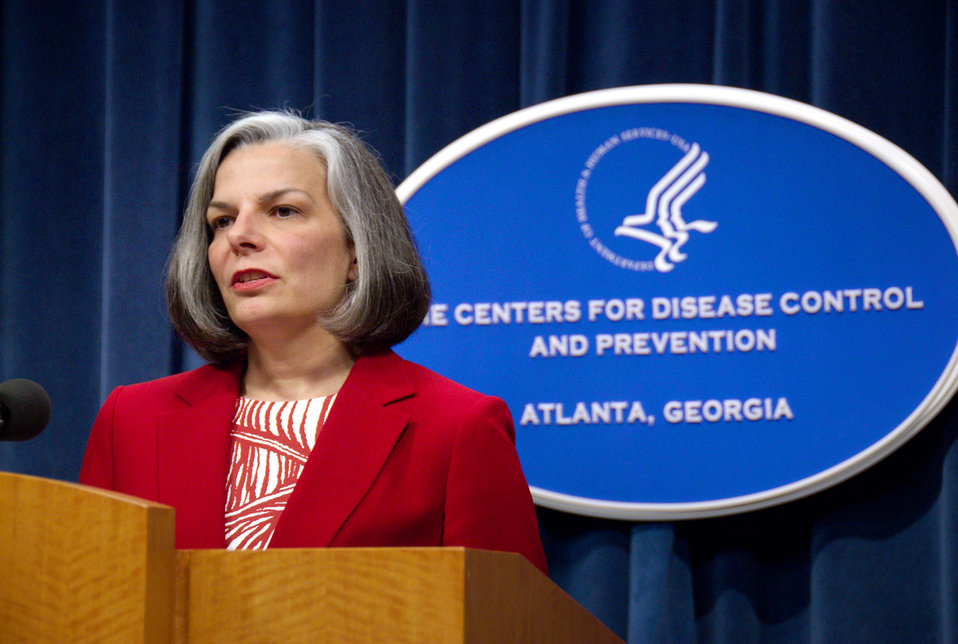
This 2007 image depicted former Centers for Disease Control Director (2002 - 2008), Dr. Julie Gerberding, conducting a press briefing regarding the organization's public health investigation into who may have been exposed to an extensively drug-resistant tuberculosis (XDR-TB) infected person. The information release included the action and steps that the CDC was taking in response to a case of XDR-TB in a United States citizen who'd undertaken international travel. XDR-TB is a recently defined subtype of a multi-drug resistant TB, which can cause severe illness and death.